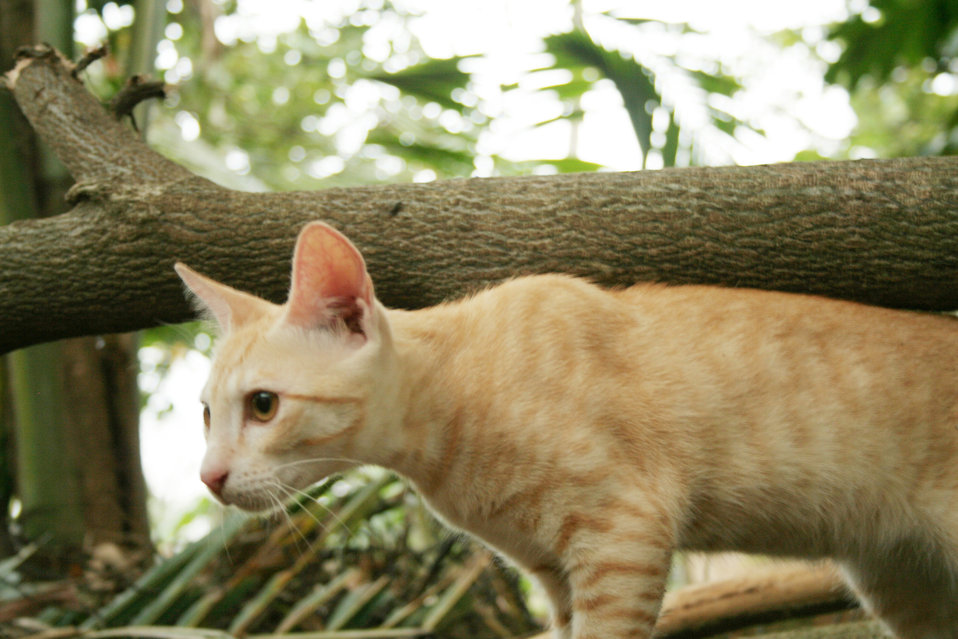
This work is dedicated to Public Domain